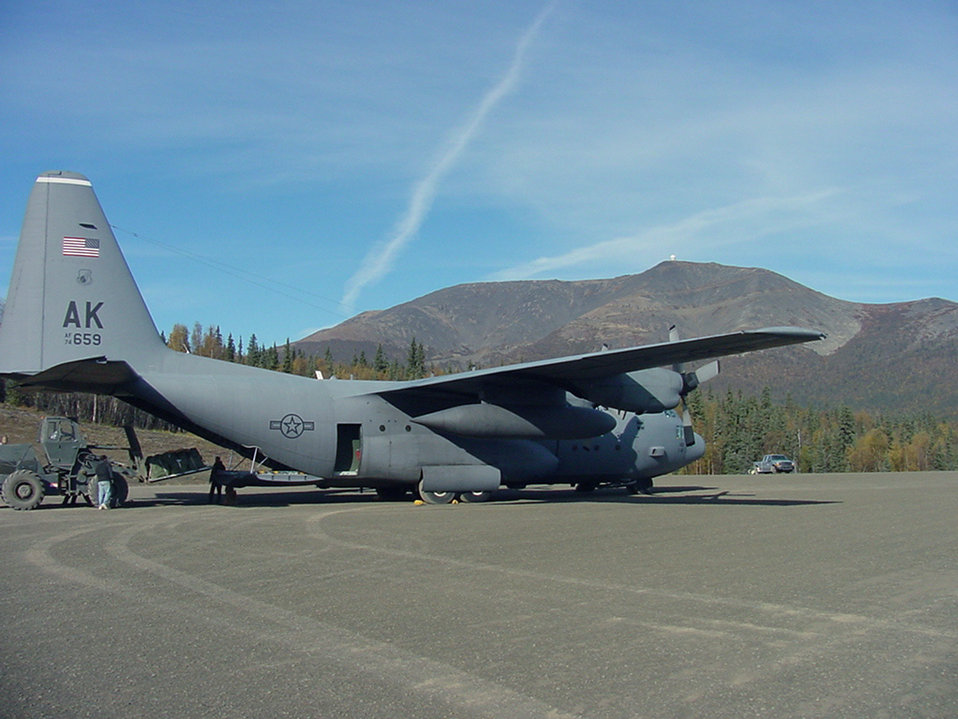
Airmen deploy for fuel-spill exercise

ELMENDORF AIR FORCE BASE, Alaska -- The 611th Civil Engineer Squadron spill team here traveled to Tatalina via a C-130 Hercules as part of an annual three-day fuel spill-response exercise. The Hercules is the primary vehicle for moving supplies to Alaska's remote sites. The C-130 is assigned to the 517th Airlift Squadron here.